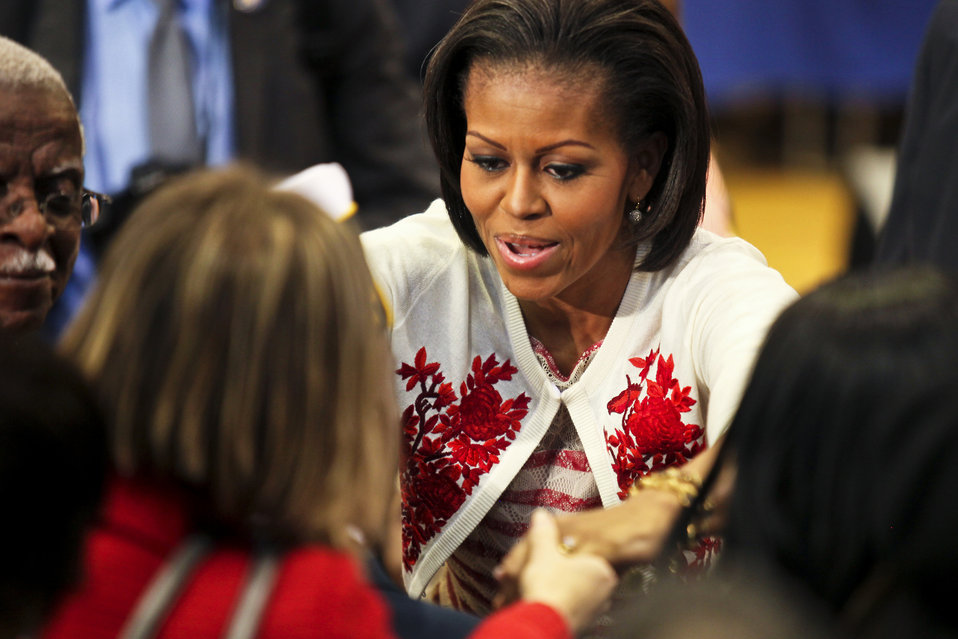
Mrs. Obama

First Lady Michelle Obama greets a member of the Camp Lejeune community April 13, 2011, during the